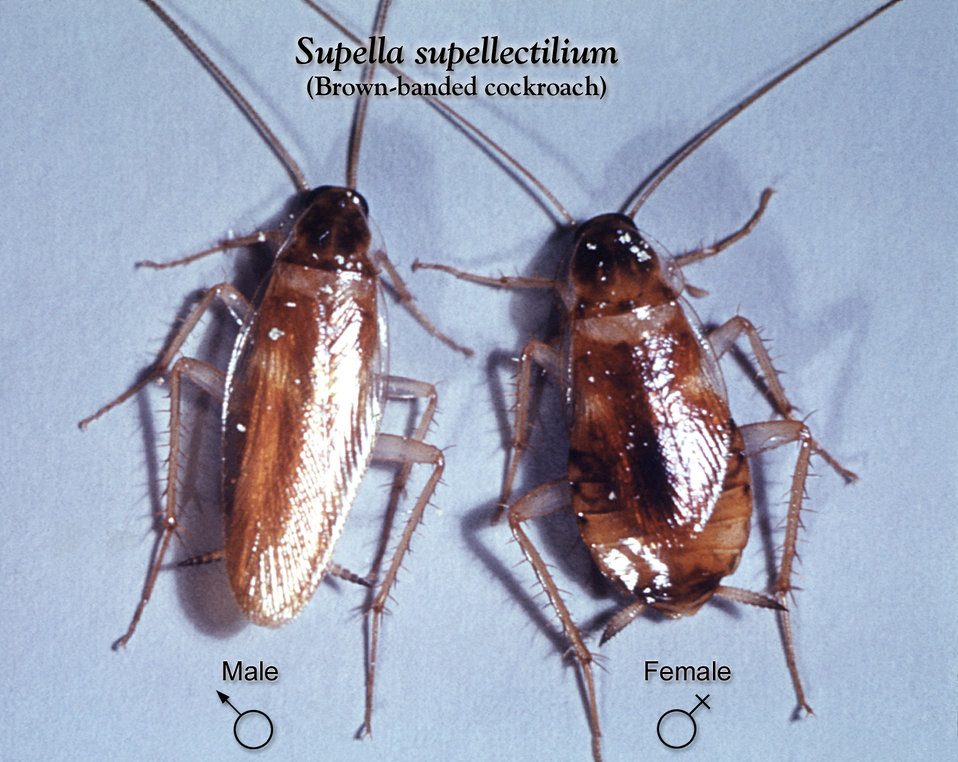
This image depicts a dorsal view of a male (Lt), and a female (Rt) brown -banded cockroach, Supella supellectilium.